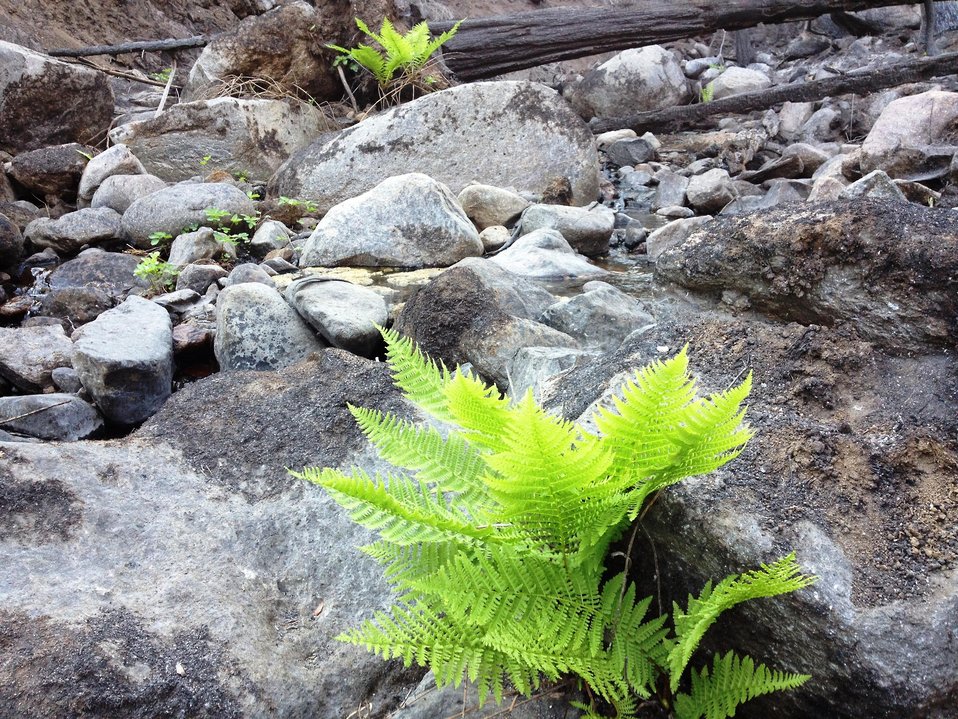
Three weeks after the Rim Fire, new vegetation starts growing. Burned Area Emergency Response (BAER) is a rapid assessment of burned watersheds by a BAER team to identify imminent post-wildfire threats to human life and safety property and critical natural or cultural resources on National Forest System lands and take immediate actions to implement emergency stabilization measures before the first major storms. Fires result in loss of vegetation exposure of soil to erosion and increased water runoff that may lead to flooding increased sediment debris flows and damage to critical natural and cultural resources. BAER team members implement seeding and mulching installation to prevent erosion, erect temporary water run-off control structures that will protect recovering areas, and installation of warning signs, replace safety related facilities, remove safety hazards, prevent permanent loss of habitat for threatened and endangered species, and prevent the spread of noxious weeds and protect critical cultural resources. The Rim Fire in the Stanislaus National Forest near in California began on Aug. 17, 2013 and is under investigation. The fire has consumed approximately 256,169 acres and is 84% contained.